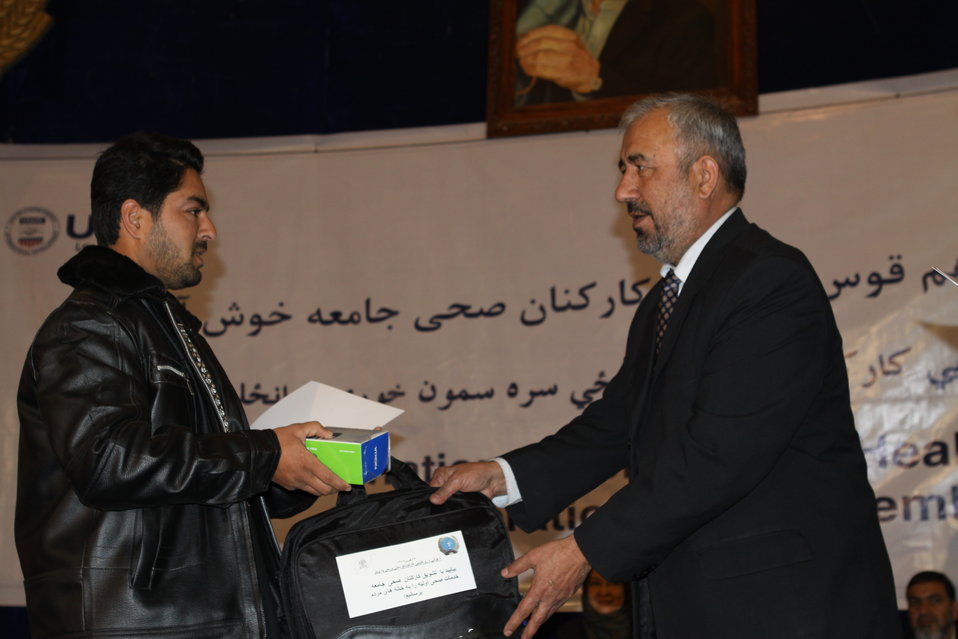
Community Health Workers Celebrated

Kabul, Afghanistan | December 5, 2010 — In support of the United Nations designated International Volunteer Day for Economic and Social Development, Afghanistan’s Ministry of Public Health celebrated its annual Community Health Worker Day today. Acting Minister of Public Health Dr. Suraya Dalil, USAID Senior Deputy Mission Director Robert Hellyer, other government officials, and international donors joined in recognizing the critical contribution of community health workers in Afghanistan and encouraging them to continue their voluntary support to their communities.
The event praised the contributions of the more than 22,000 volunteers throughout the country who deliver community level health-education, counseling, and services out of village health posts located in private homes. The Ministry of Public Health envisioned that community-based healthcare programs will actively encourage communities and families to adopt healthy lifestyles and behaviors, and provide families access to high quality and socially acceptable preventative medicine and life-saving services.
“We have 22,000 community health workers in Afghanistan that are able to implement the basic and standard medicines. They all have been trained through a job description,” said Minister Dalil. Addressing the health workers, she added, “I am proud and feel powerful that I have people like you.”
USAID-funded health projects collaborate closely with the Ministry of Public Health to improve the health and nutritional status of Afghans, provide quality primary healthcare, and promote healthy behaviors at the community and household-levels. USAID supported the training of more than 9,000 of the volunteer community health workers currently working in Afghanistan.
“On behalf of the American people, I congratulate the Community Health Workers for their diligence to gain the skills and knowledge necessary to serve their communities in this important role,” said USAID Senior Deputy Mission Director Hellyer. “USAID strongly supports community based health care and believes that quality community-based health services are essential to reaching Afghanistan’s Millennium Development Goals.”
To support the Basic Package of Health Services, USAID assisted in developing the community health worker training manual, helped train community health worker supervisors and master-trainers, facilitated in-service training, and produced and developed reporting tools, job aids, and education materials.